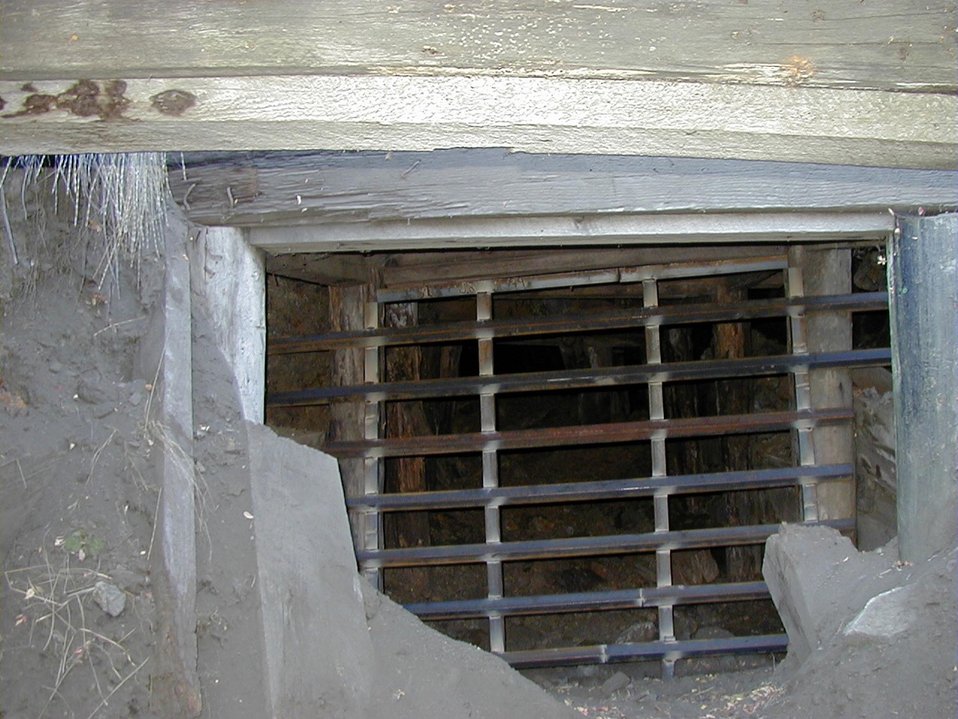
Bate-Gate closure of adit, Snoose Mine, Bellevue, Idaho Shoshone Field Office, Upper Snake River District